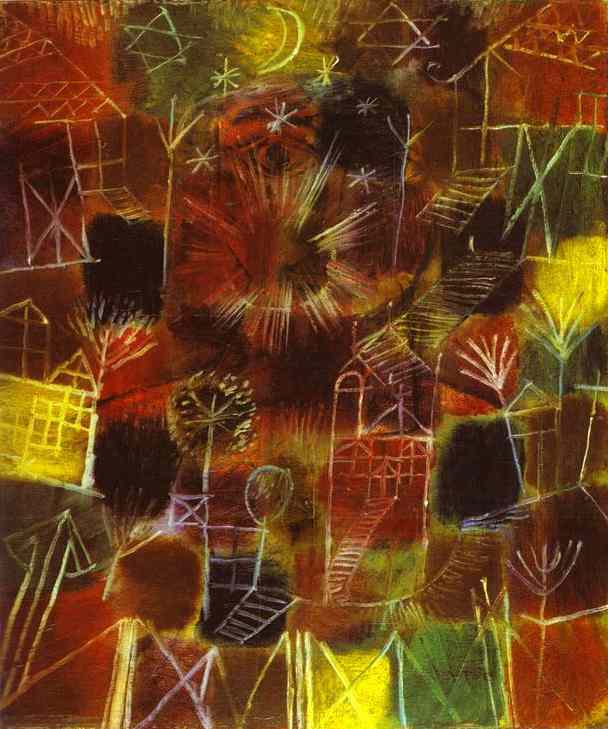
Oil on pasteboard. 48 x 41 cm